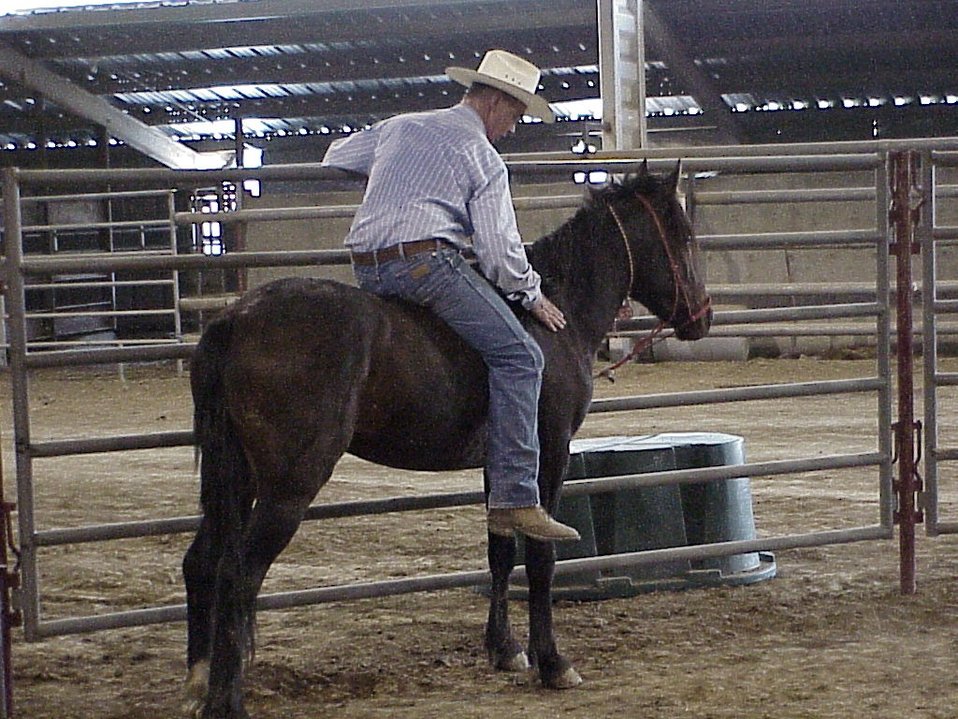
Horse Gentler Mario Johnson Lewiston Wild Horse and Burro Adoption Program Auction WHB indoor auction Cottonwood Field Office UCSC Upper Columbia Salmon Clearwater District